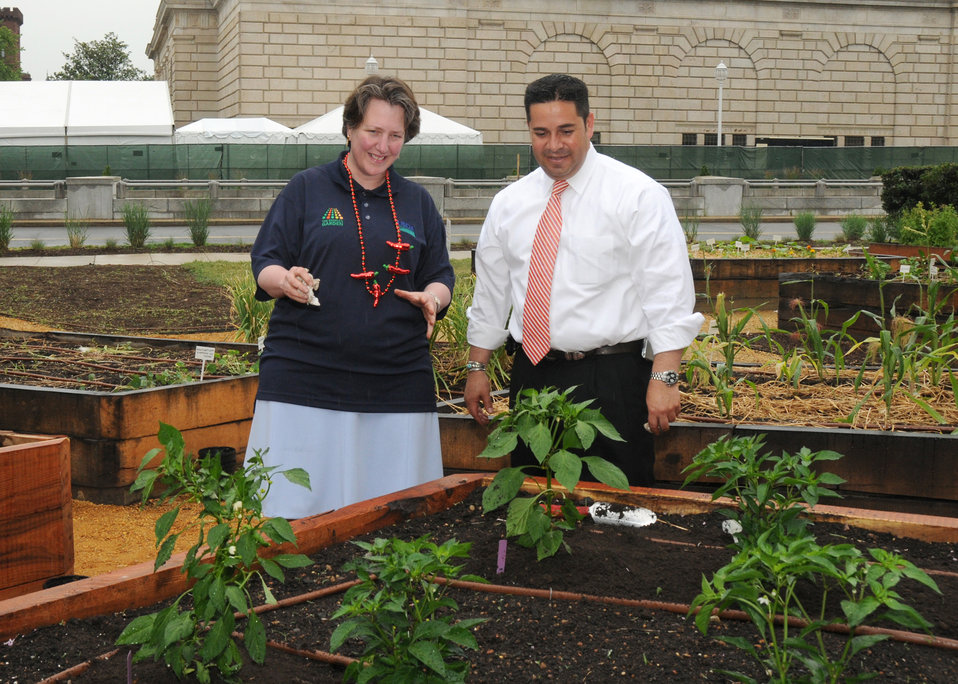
Agriculture Deputy Secretary Kathleen Merrigan explains the purpose and future plans for the U. S. Department of Agriculture’s People’s Garden to New Mexico Congressman (3rd District) Ben Ray Luján at the New Mexico Chile Pepper Fiesta held on Wednesday, June 9, 2010 on the east lawn of the Whitten Building at the USDA People’s Garden in Washington, DC. USDA photo 10di1397-147